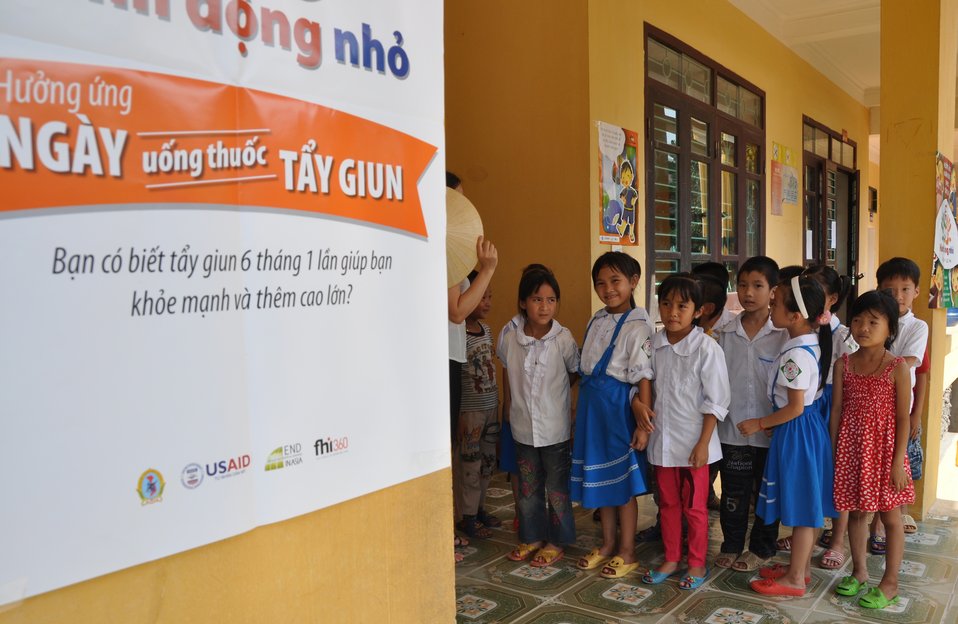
USAID supports deworming education and medication distribution in Bac Giang Province

May 20, 2013